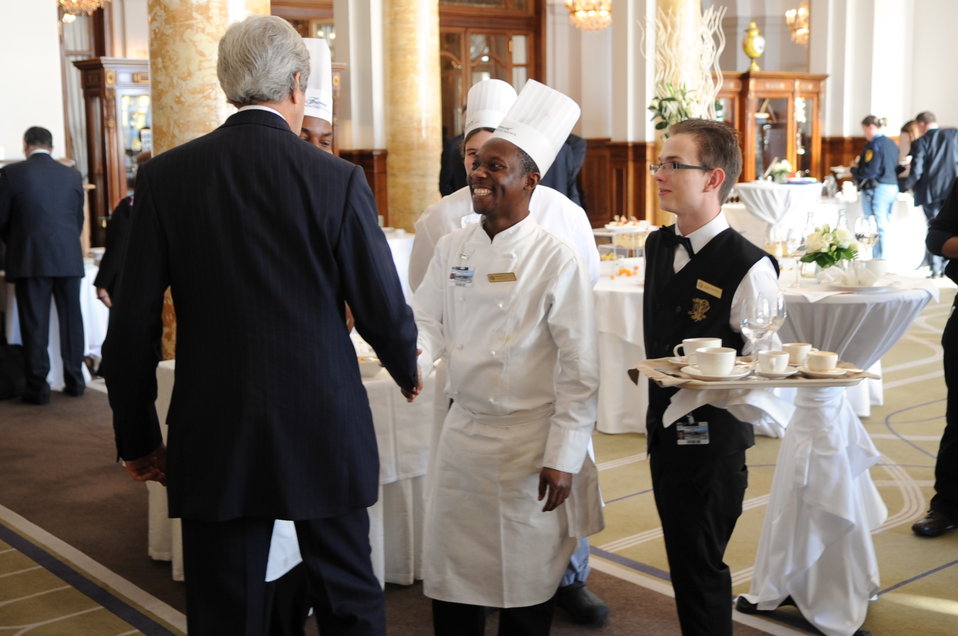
Secretary Kerry Greets Staff at Hotel Hosting Geneva II Conference

U.S. Secretary of State John Kerry greets hotel workers who called out to him during a break in the Geneva II conference in Montreux, Switzerland, on January 22, 2014.